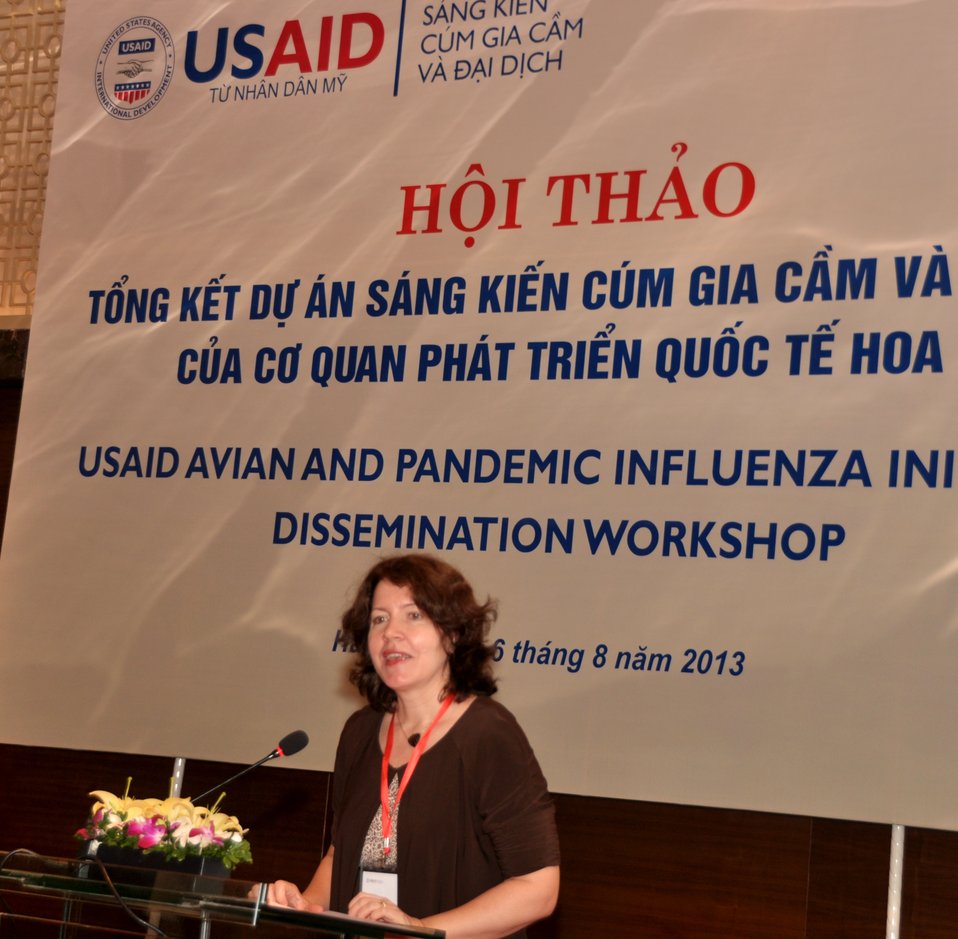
USAID Office of Health Director Laurel Fain addresses the USAID Avian and Pandemic Influenza Initiative Dissemination Workshop

Dissemination Workshop
Hanoi, August 6, 2013.